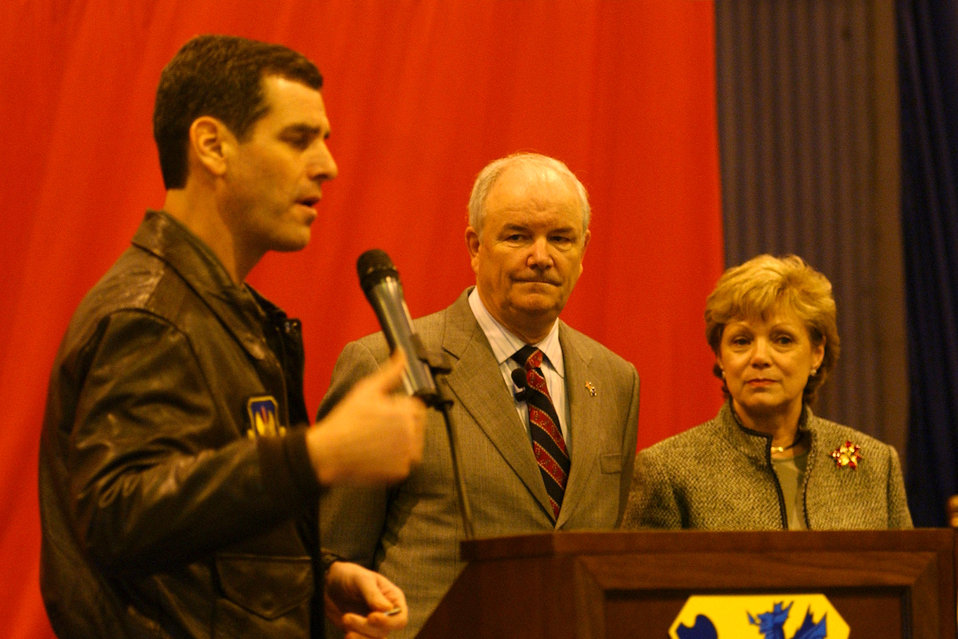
Caring for Airmen and their families

Brig. Gen. Robert Yates thanks the Secretary of the Air Force Michael W. Wynne and his wife, Barbara Wynne, Dec. 5 for their visit to Aviano Air Base, Italy. Secretary Wynne is visiting with Airmen to get an orientation of the 31st Fighter Wing mission. Secretary Wynne is responsible for the affairs of the Department of the Air Force and ensures the Air Force can meet its current and future operational requirements. General Yates is the 31st Fighter Wing commander.